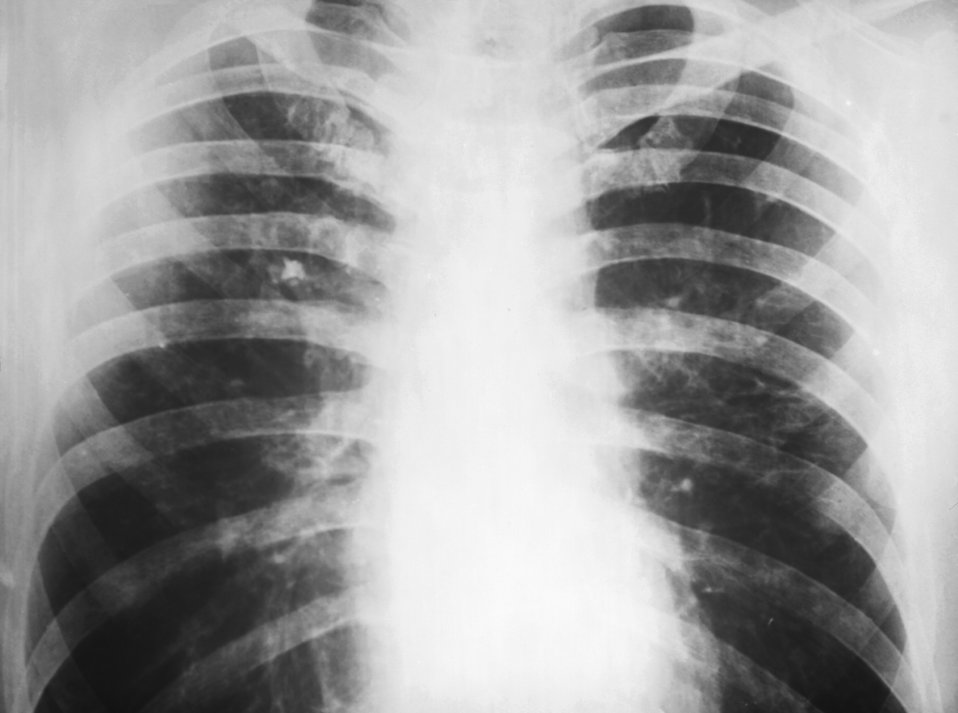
This 1961 plane film chest x-ray revealed the presence of a pulmonary infiltrate. This, as well as other diagnostic findings, indicated that the patient was suffering from a case of candidiasis, which lead to the onset of candida pneumonia, a fungal infection caused by members of the fungal genus, Candida spp.. A specie of this genus, Candida albicans is a normal inhabitant of the human mouth and gastrointestinal tract.